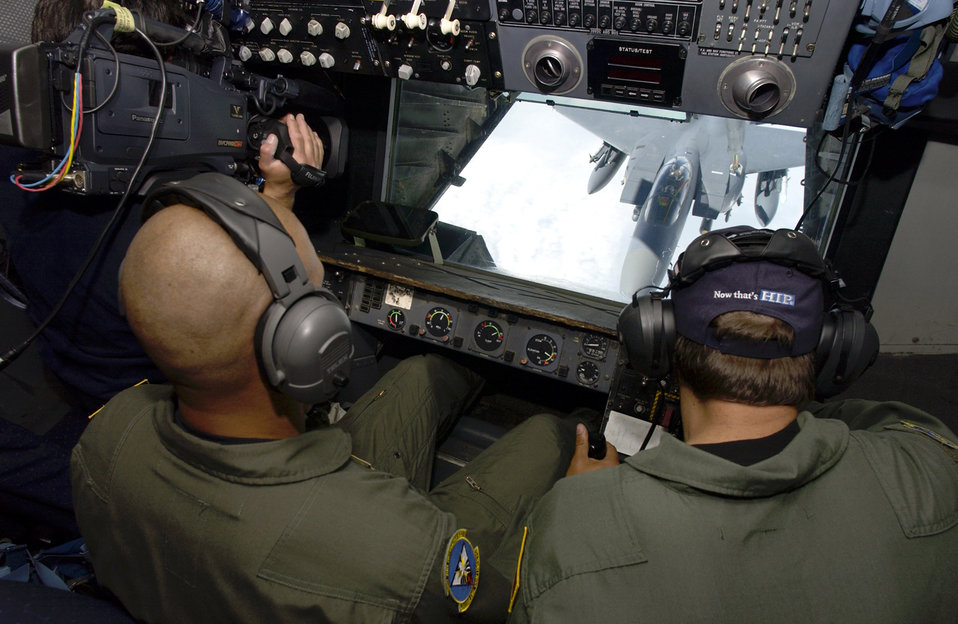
Swapping jobs

OVER NORTH CAROLINA -- Senior Airman Chardo Richardson (center) shows New York Mets pitcher Al Leiter how to refuel an F-15E Strike Eagle from Seymour Johnson Air Force Base, N.C, as a cameraman records the days events. Airman Richardson will trade places with Mr. Leiter on June 22 to become a Met for a day. The